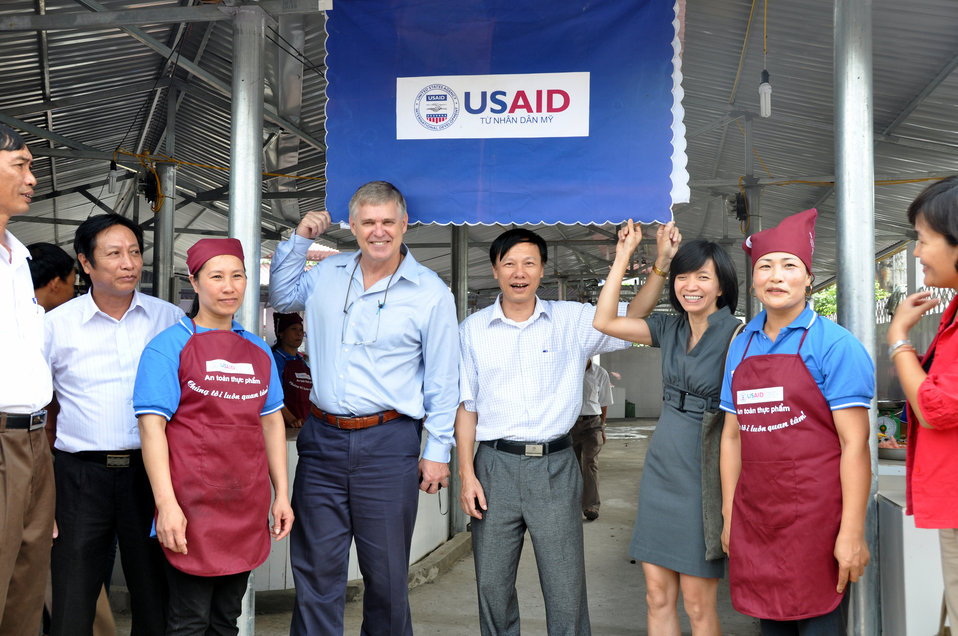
Handover Ceremony Hoa Mac Market Ha Nam

October 26, 2012